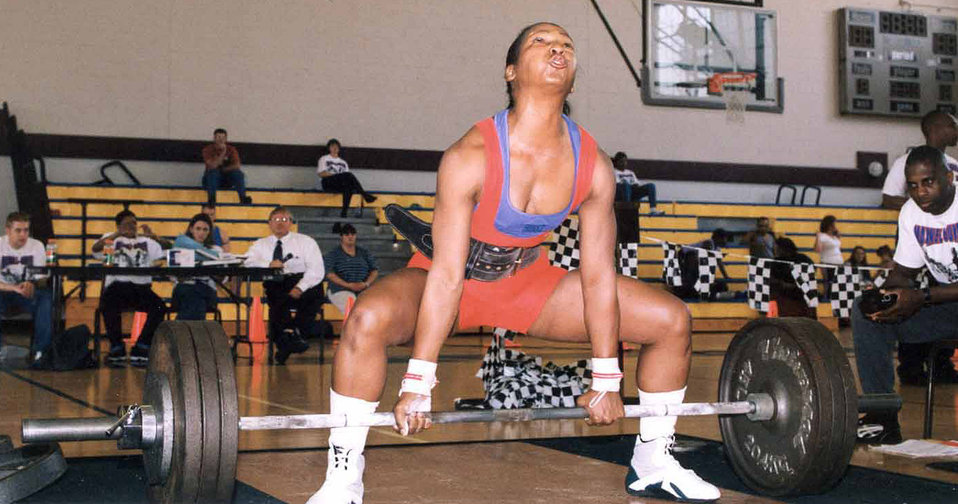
Dead lift

ROBINS AIR FORCE BASE, Ga. -- Drusilla Amos performs a dead lift at a powerlifting championship. Amos is a reservist with the 908th Airlift Wing’s 25th Aerial Port Squadron at Maxwell Air Force Base, Ala. She has set six world records on her way to nine first-place finishes in military competitions and two first-place finishes at the regional, state, and local levels.